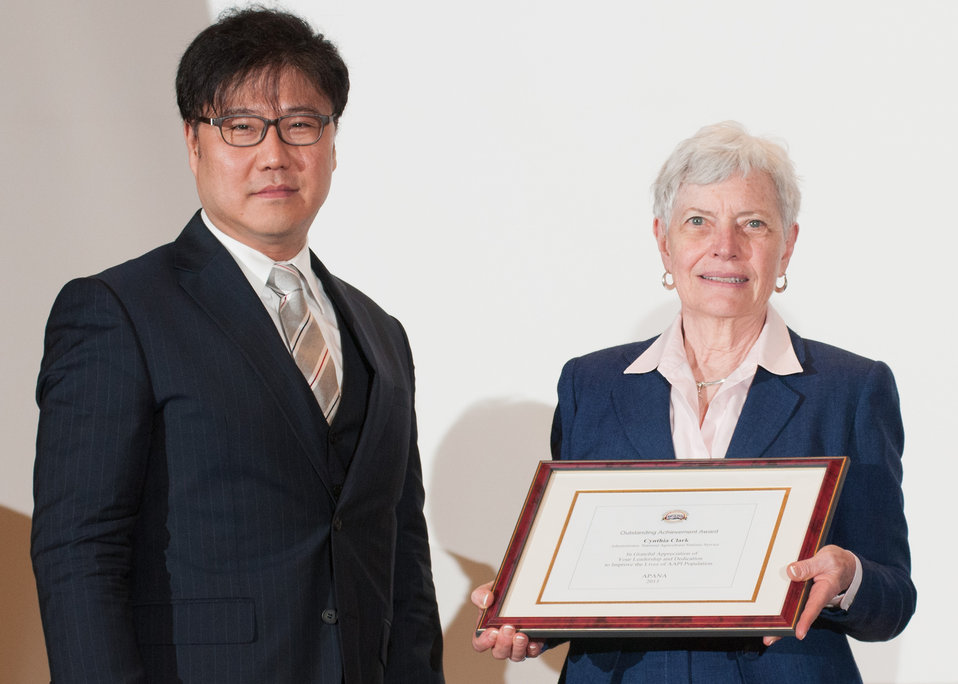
Asian Pacific American Network in Agriculture (APANA) President Justin Rhee, left, presents an “Outstanding Achievement Award” for leadership and dedication to improve the lives of the Asian Americans and Pacific Islander (AAPI) population, to U.S. Department of Agriculture’s (USDA) National Agricultural Statistics Service (NASS) Administrator Dr. Cynthia Clark, during the USDA Asian Pacific American Heritage Month Observance, at the USDA headquarters in Washington, D.C., on Thursday, May 23, 2013. NASS’ significant efforts on collecting data from socially disadvantaged farming operations that included AAPIs, resulted in more AAPI farms counted, than ever before. This year’s theme is “Building leadership; Embracing the Cultural Values and Inclusions.”